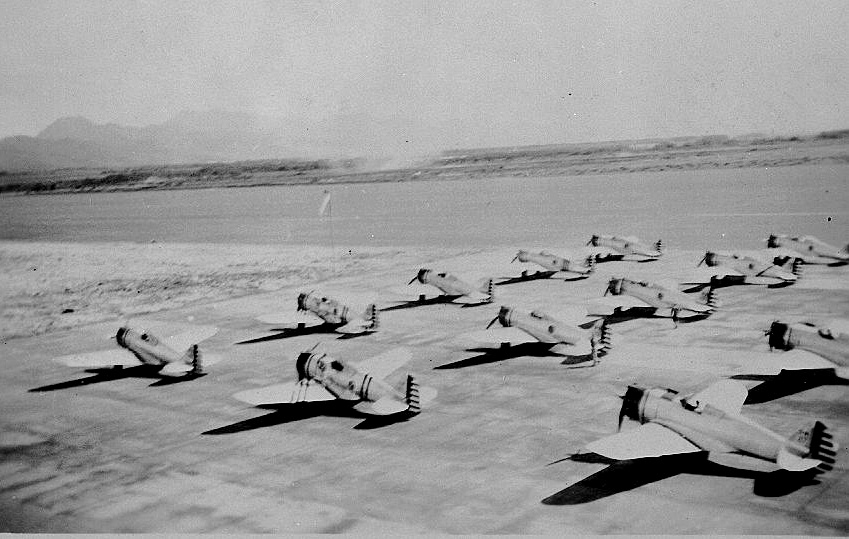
P-36s

These Curtis P-36 Hawks were parked on the ramp at Hickam Field, Hawaii, in January, 1940.